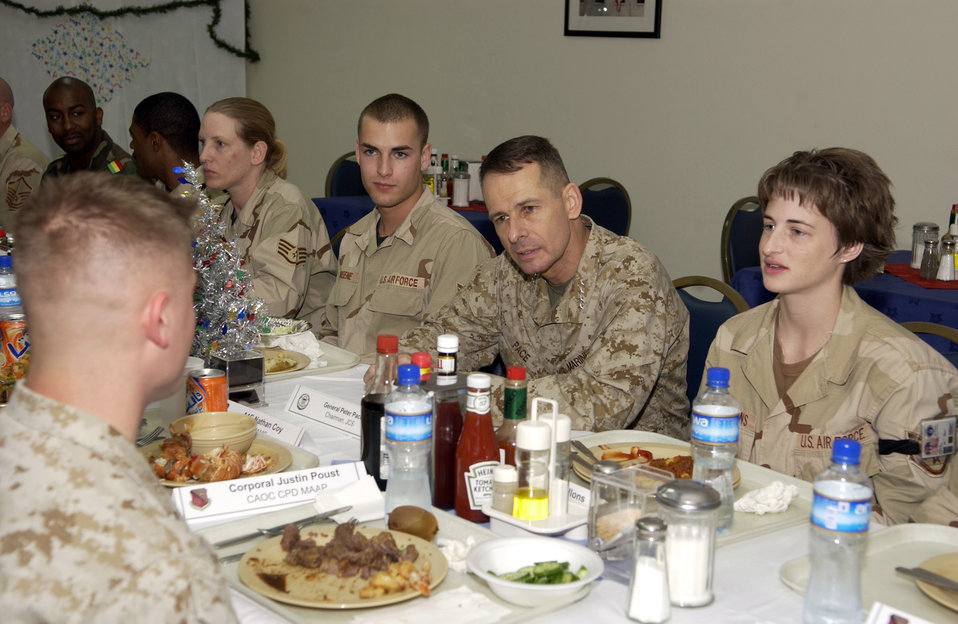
Visit with the troops

SOUTHWEST ASIA (AFPN) -- Marine Gen. Peter Pace, chairman of the Joint Chiefs of Staff, has dinner with Airmen before a United Service Organizations tour performance in Southwest Asia. The general visited troops in the region over the holidays to thank them for their support of the war on terrorism.